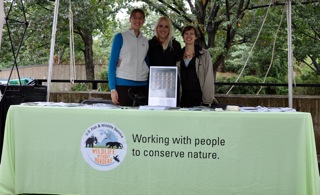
Save Vanishing Species Stamp First Day of Issue